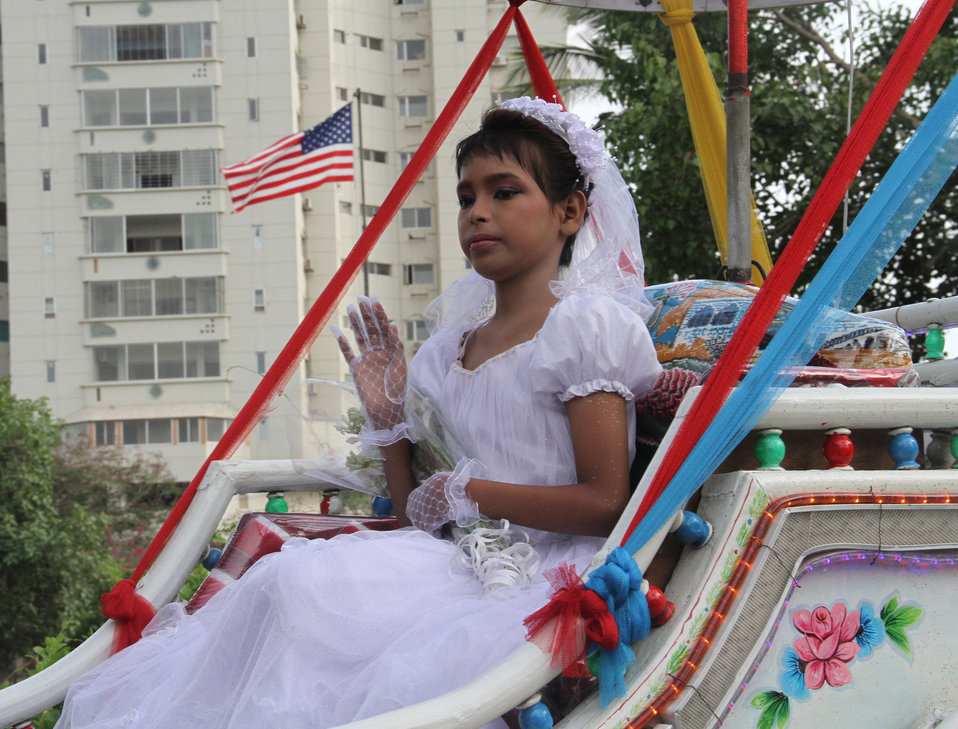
Make-A-Wish

Karachi, July 27, 2011 – Twelve year-old Saira Nadeem arrives at the old residence of the U.S. Consul General dressed up as a princess in a decorated horse-carriage. Saira Nadeem, who is suffering from a heart disease, wished to be a fairy or princess. With a grant from USAID, Make-A-Wish Pakistan will grant the wishes of 55 children.